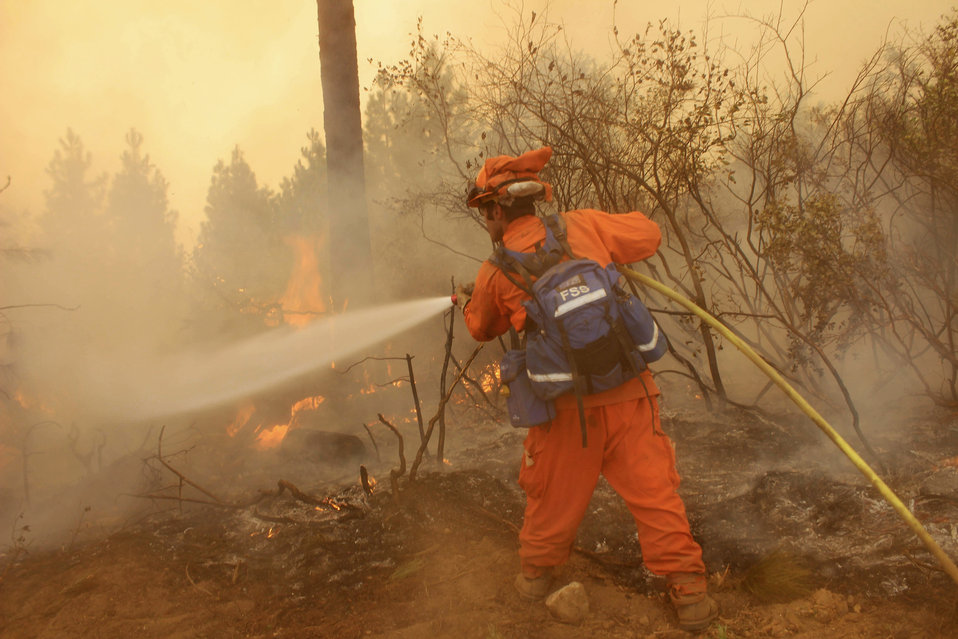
California fire inmate crewman sprays down a hotspot at the Rim Fire. The Rim Fire in the Stanislaus National Forest near in California began on Aug. 17, 2013 and is under investigation. The fire has consumed approximately 235,841 acres and is 70% contained.